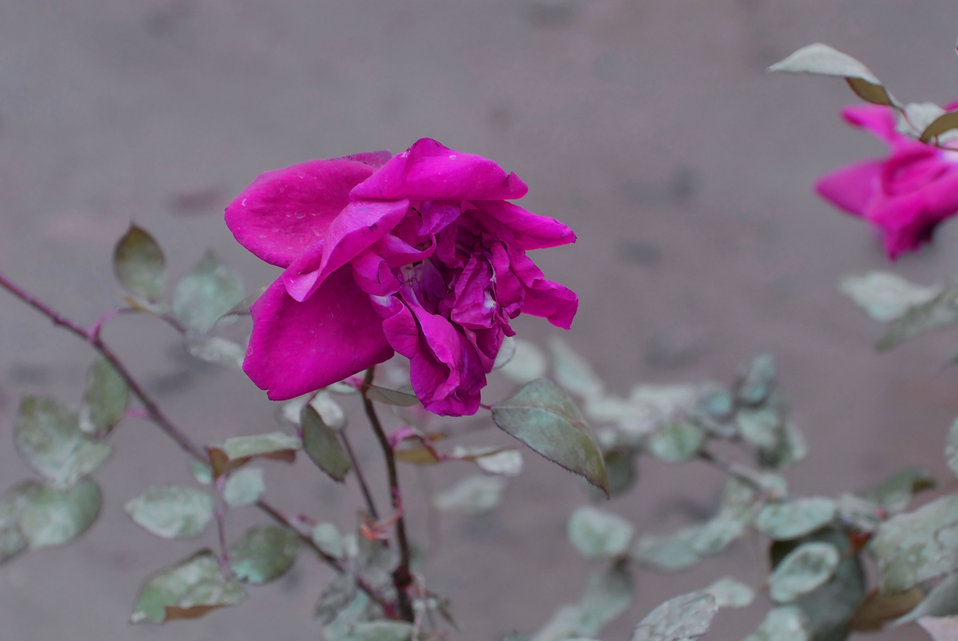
'On the Road' in Nangarhar Province